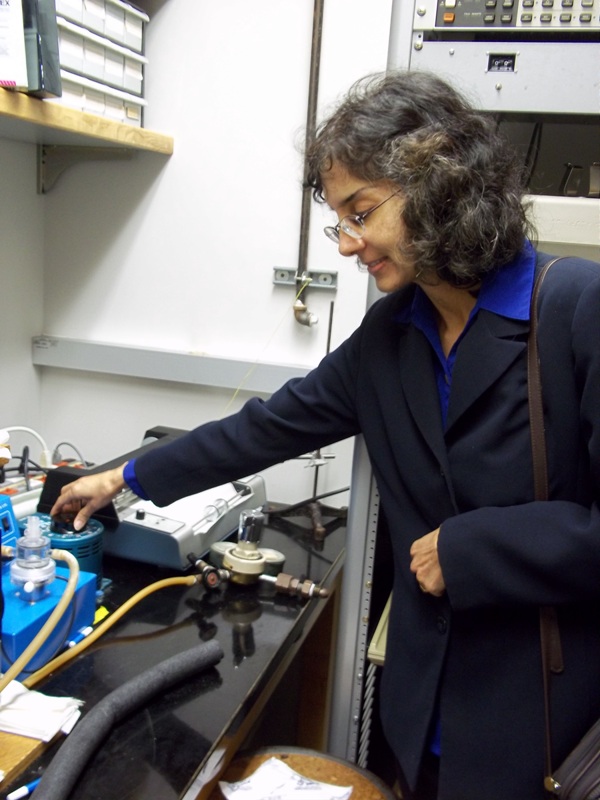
Sunita Satyapa

Sunita Satyapal is the Director of the Department of Energy’s Fuel Cell Technologies Office within the Office of Energy Efficiency and Renewable Energy. In this capacity Dr. Satyapal is responsible for the Office’s overall strategy and execution, including oversight and coordination of approximately $100 million in research, development, demonstration and deployment activities related to hydrogen and fuel cells. Dr. Satyapal has 20 years of experience in academia, industry and government, including eight years at United Technologies Research Center and at UTC Power. While in industry, she was responsible for managing research groups ranging from 15 to 50 scientists, engineers and technicians covering a broad range of chemistry and energy technologies, including hydrogen and fuel cells. In addition, she has significant experience in business development and international collaborations.

Read her full story at energy.gov/diversity/articles/women-energy-sunita-satyapal